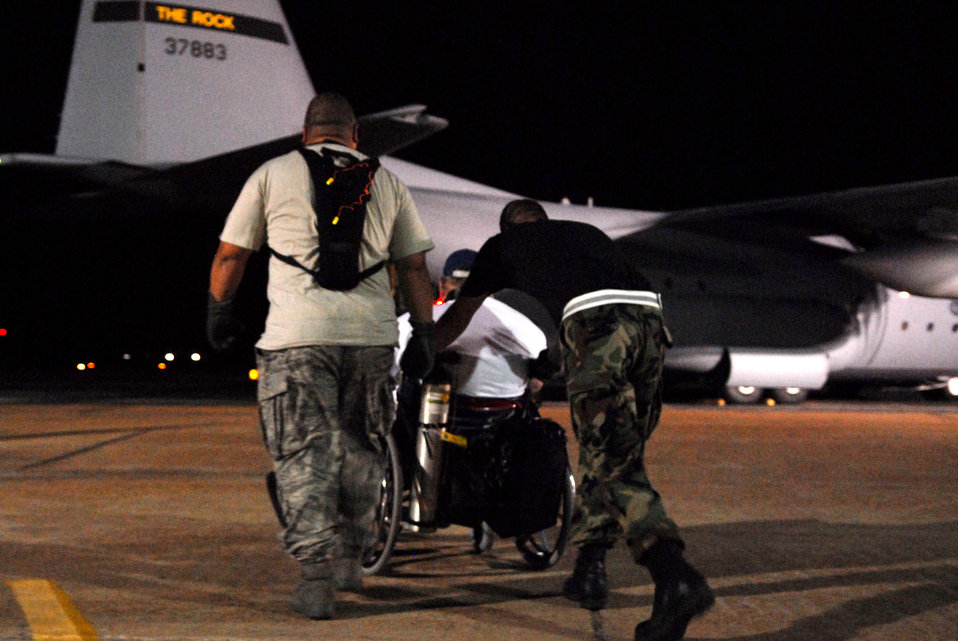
Airman evacuate patients from Beaumont

Airmen load hospital patients onto a C-130 aircraft Sept. 12 at the airport in Beaumont, Texas, for a flight to Lackland Air Force Base in San Antonio. These patients are being transported by aircrews from Little Rock AFB, Ark., and medical Airmen from the 908th Aeromedical Evacuation Squadron at Scott AFB, Ill., in preparation for Hurricane Ike's landfall in southern Texas